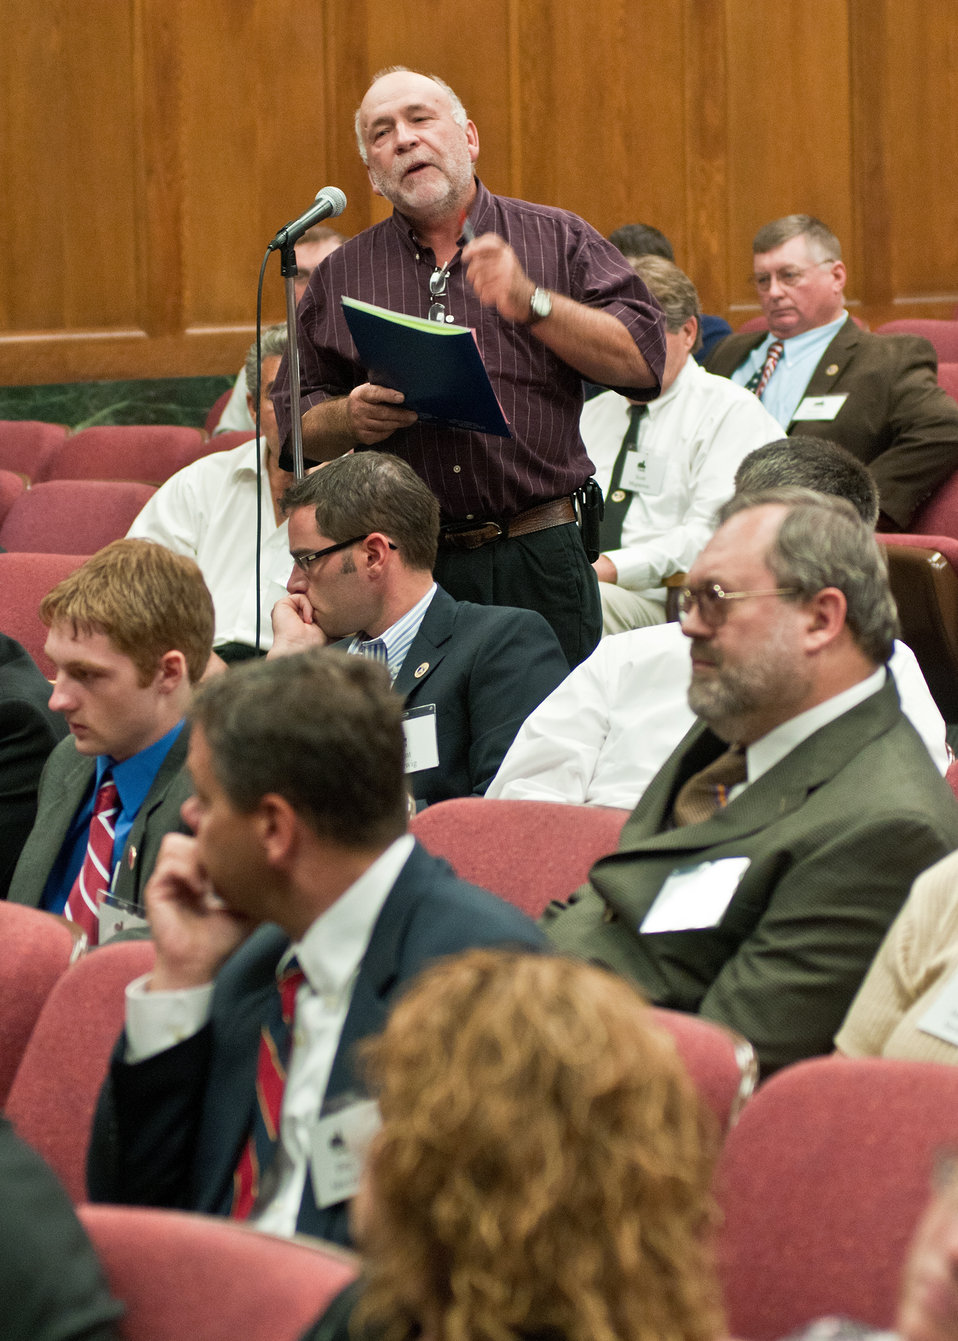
President Iowa Farmer’s Union, Clear Lake, IA Chris Petresen and other members of the National Farmer’s Union were able to ask questions to Agriculture Secretary Tom Vilsack at the U.S. Department of Agriculture during their annual Legislative Fly-In in Washington, D. C. on Monday, Sept. 12, 2011.